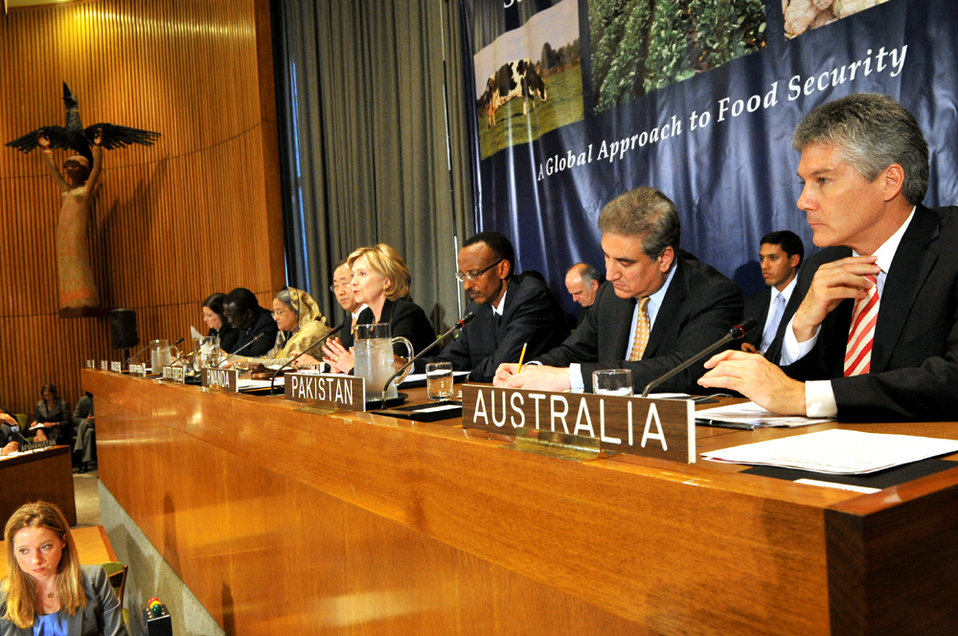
UNGA 2009: Food Security Forum

U.S. Secretary of State Hillary Rodham Clinton Secretary Clinton delivers remarks at a global Food Security event at the United Nations in New York City, New York September 26, 2009.